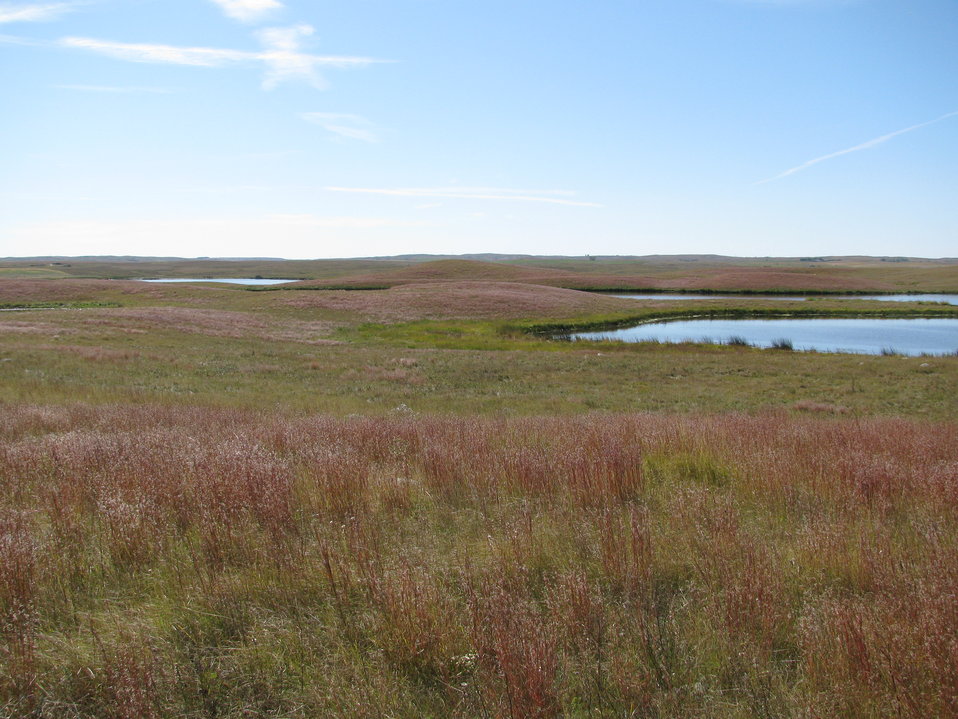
Prairie

Little bluestem is the dominant red grass in this photo. It is a native to the mixed-grass prairie.